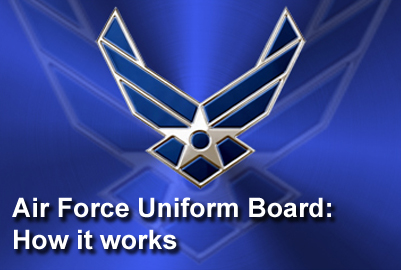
Air Force Uniform Board: How it works

Few Airmen know the process behind uniform changes or who is responsible for those changes.